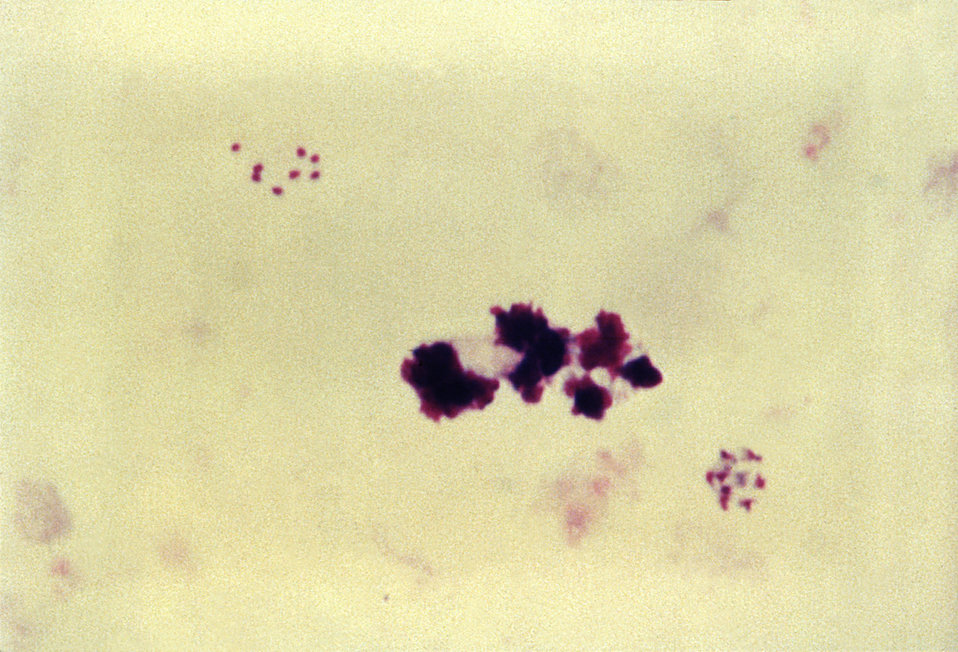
This thick film Giemsa stained micrograph depicts a mature Plasmodium malariae schizont.